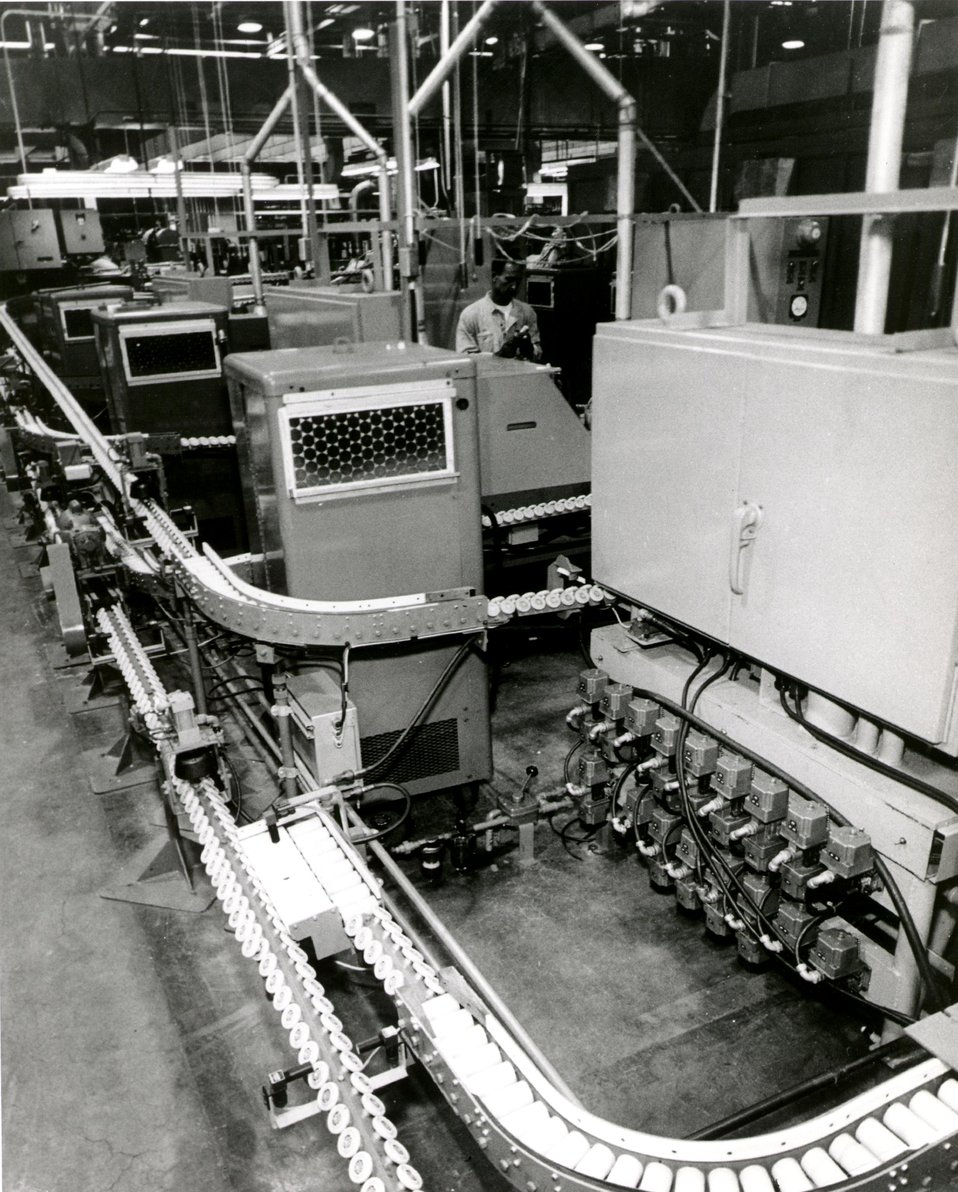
Special skate-wheel conveyors are used to move the clad fuel elements from one work station to another. c. 1964.